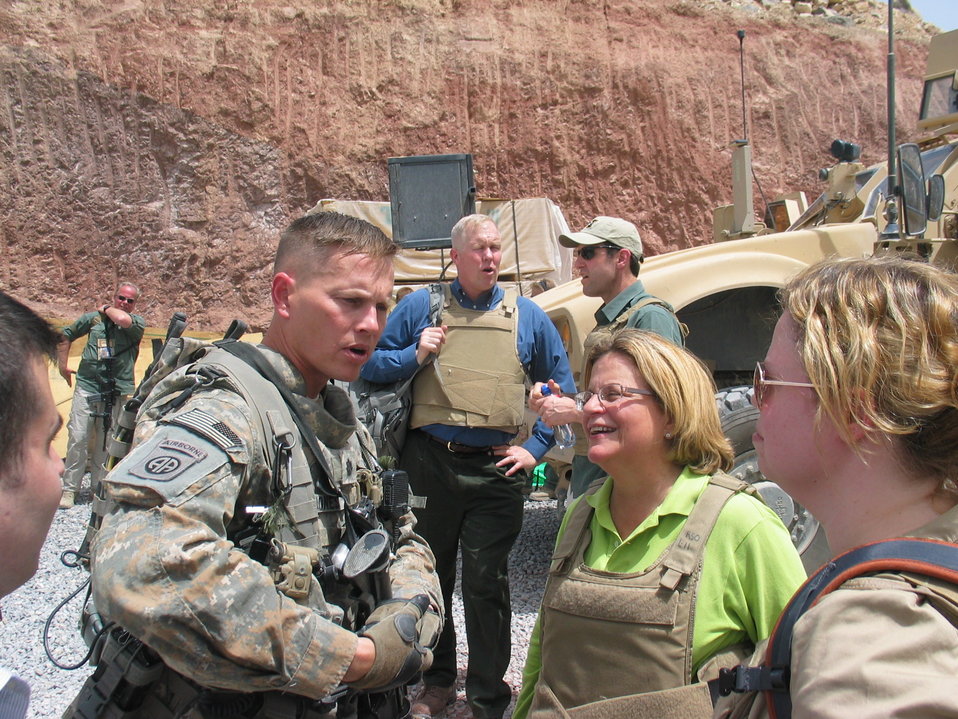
CODEL Berman